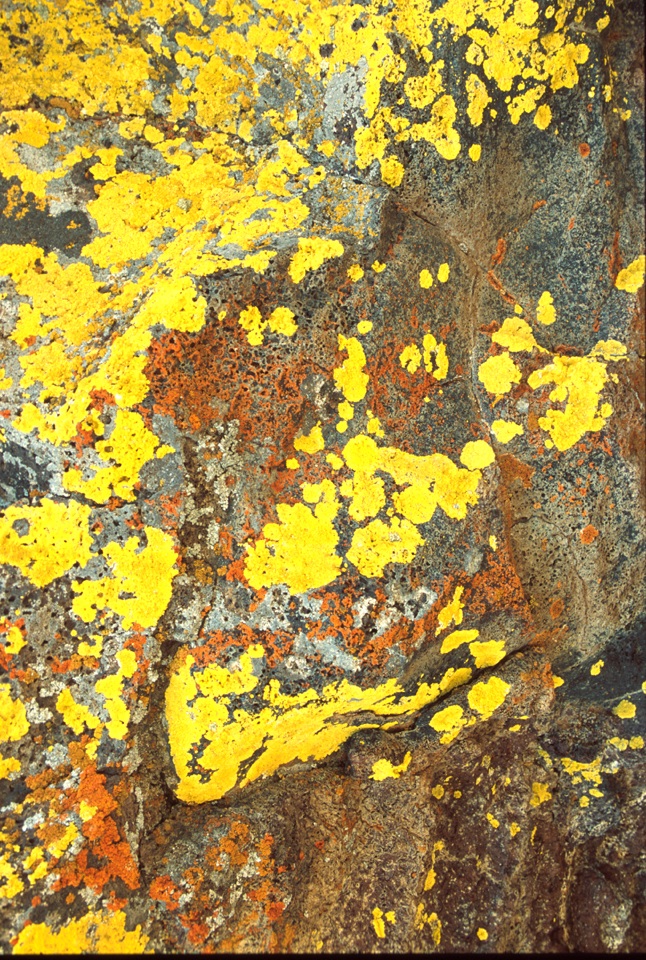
Craters of the Moon National Monument Shoshone Field Office USRD Upper Snake River District